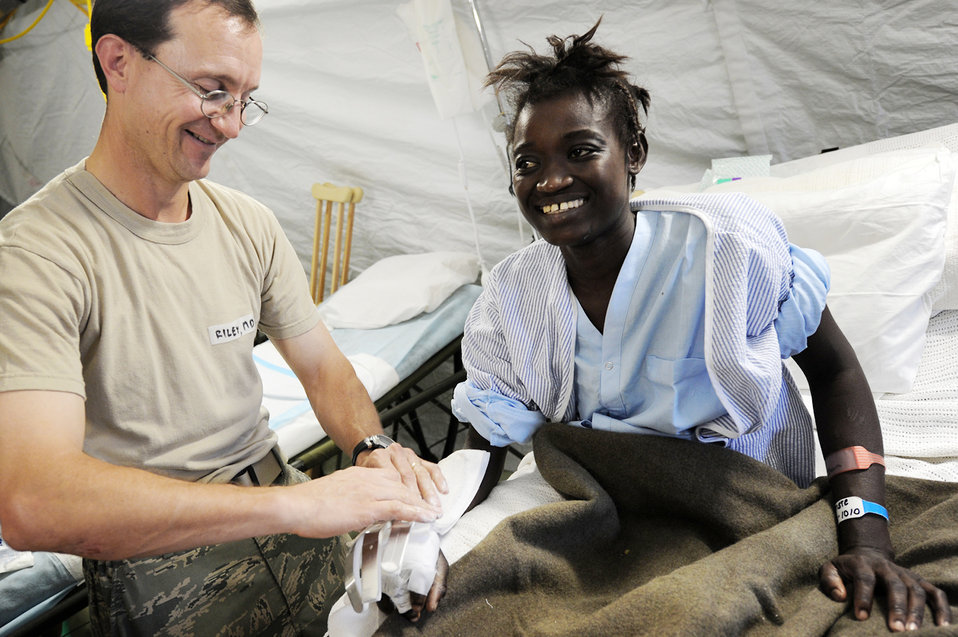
Airmen provide care, compassion to people of Haiti

An Airman from Travis Air Force Base, Calif., treats an earthquake survivor at an expeditionary medical facility Feb. 3, 2010, located along the harbor of Port-au-Prince, Haiti. A 7.0-magnatude earthquake struck Haiti Jan. 12, leaving thousands of Haitians displaced and without access to food, water and vital medical care.